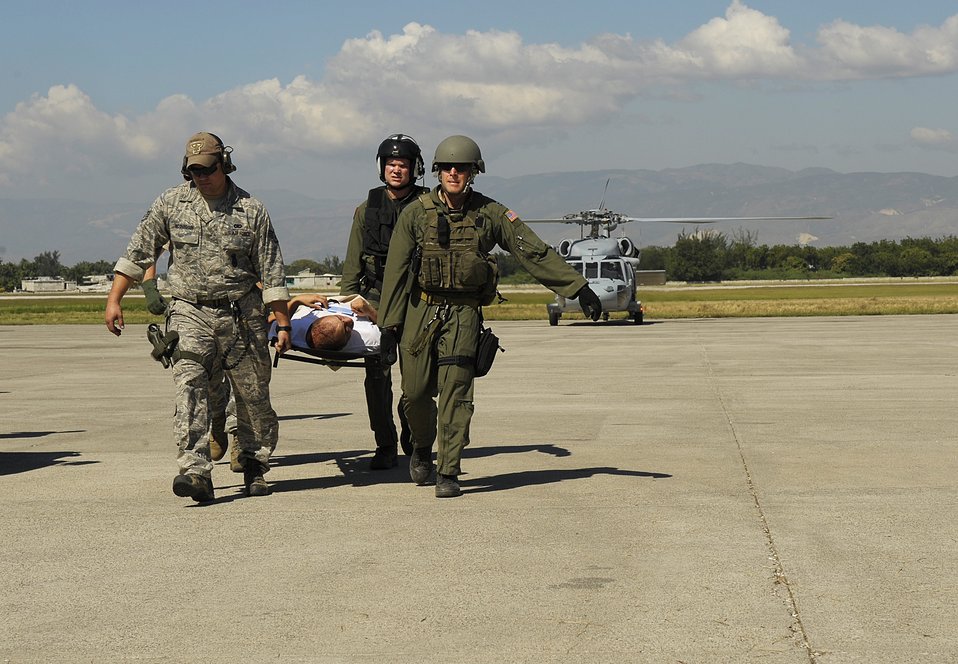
Haiti Earthquake Relief

Airmen offload injured people from a C-130 Hercules aircraft Jan. 15, 2010, after the earthquake in Port-au-Prince, Haiti. The Airmen are assigned to the Air Force Special Operations Command at Hurlburt Field, Fla. AFSOC is providing an immediate rapid response capability to Haiti through U.S. Southern Command.